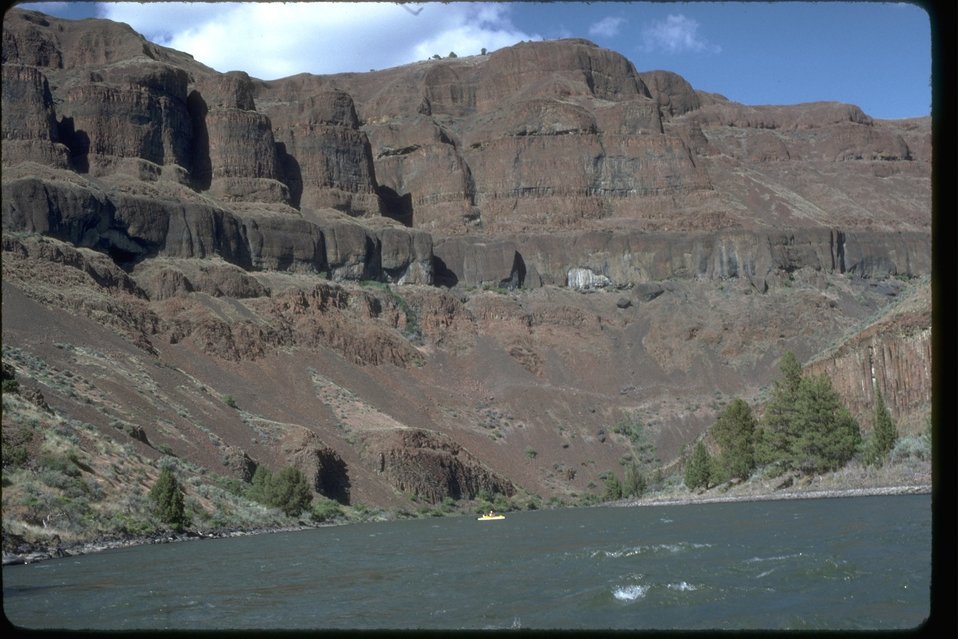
Basalt River Bluffs along the Lower John Day River.